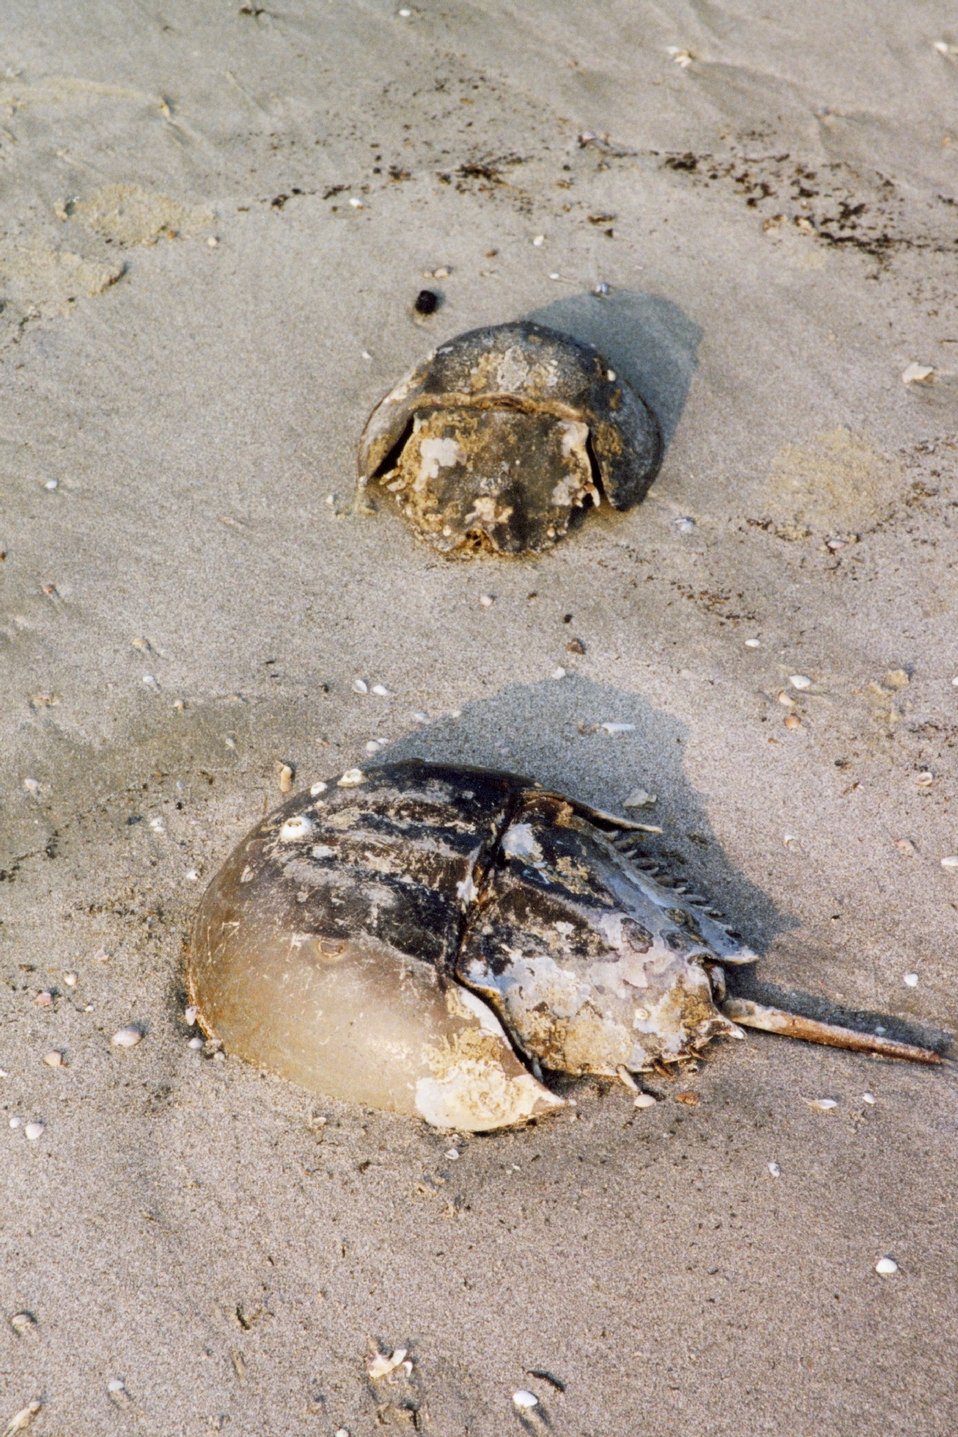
Horseshoe crab carapaces washed up on the beach.